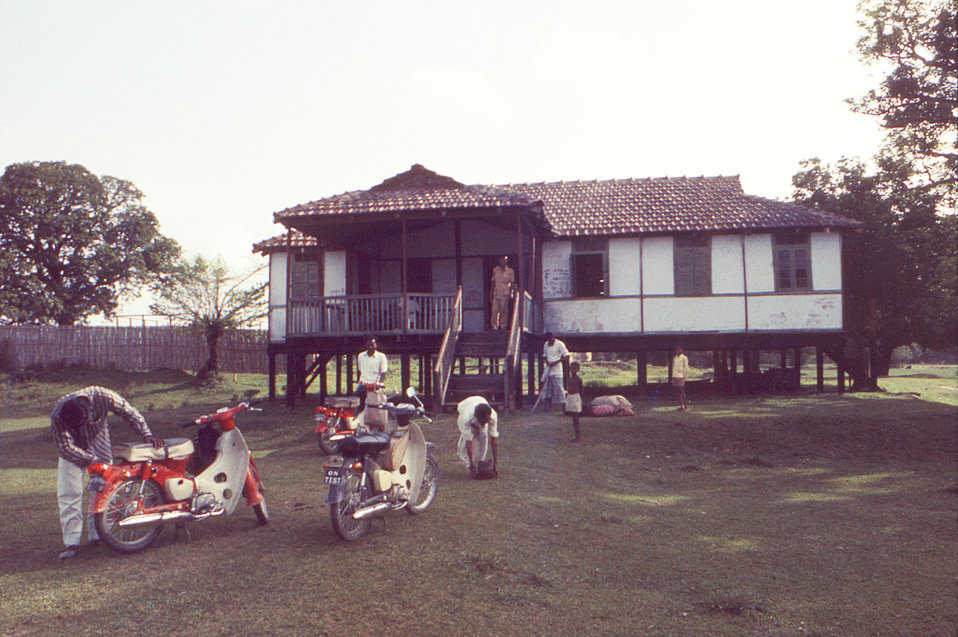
Photographed sometime in the early 1970s, during the worldwide smallpox eradication campaign, this image depicted a rest house in the country of Bangladesh with three scooters parked out front, as well as six occupants.The Disease